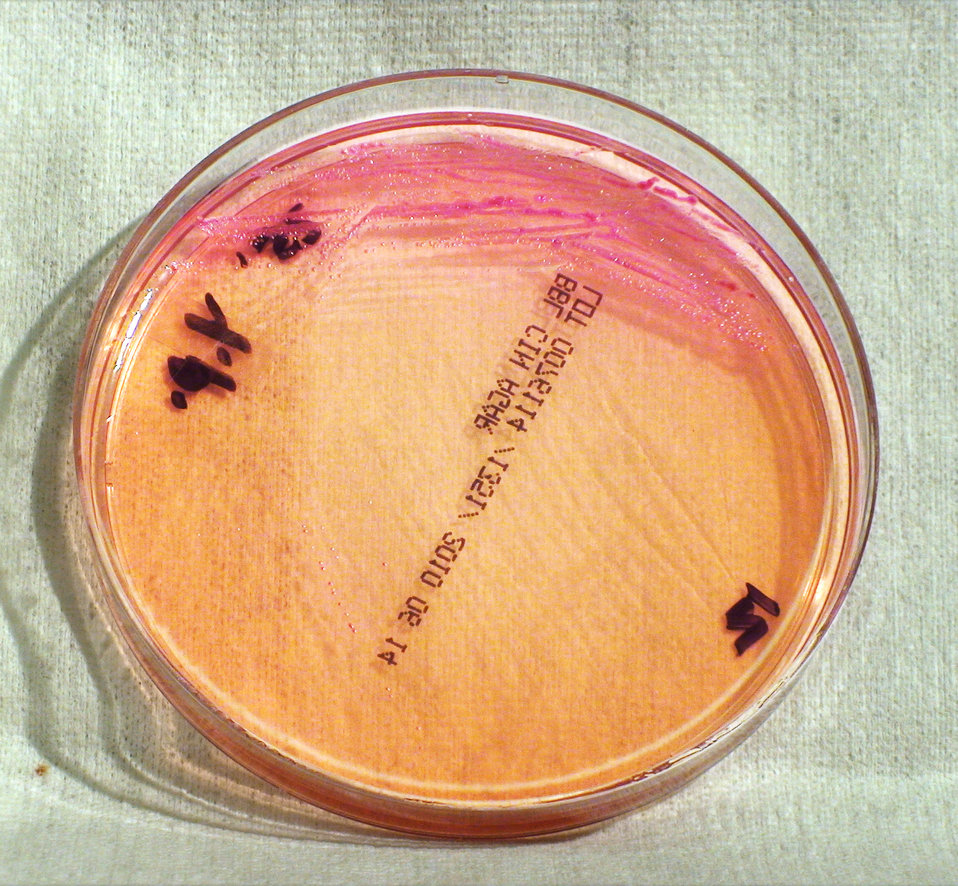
This photograph depicts the colonial morphology displayed by Gram-negative Yersinia pestis bacteria, which was grown on a medium of Cefsulodin Irgasan Novobiocin (CIN) agar, for a 48 hour time period, at a temperature of 25�C. See PHIL 12465 and 12466, for the appearance of Y. pestis colonies, which had been grown on the same medium, and at the same temperature, but for half the time period (24hr). This organism is pathogenic towards humans, and is responsible for causing the disease known as plague.